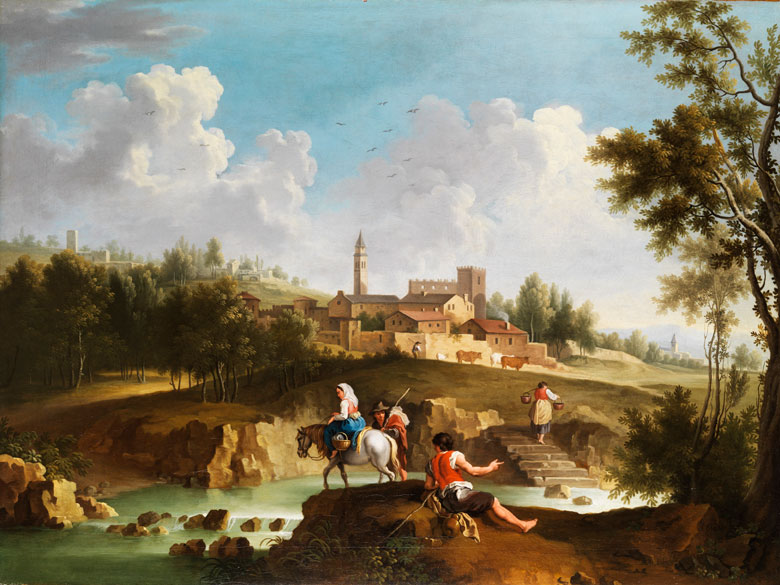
Einzelgemälde eines Paars südlicher Landschaften, Öl auf Leinwand, doubliert, 92 x 123 cm Blick auf eine befestigte Ortschaft mit Campanile und Zinnenturm, im Vordergrund Staffagefiguren wie eine Eselreiterin und Hirte, sowie eine Wasserträgerin, weiter hinten Hirte mit Kühen.